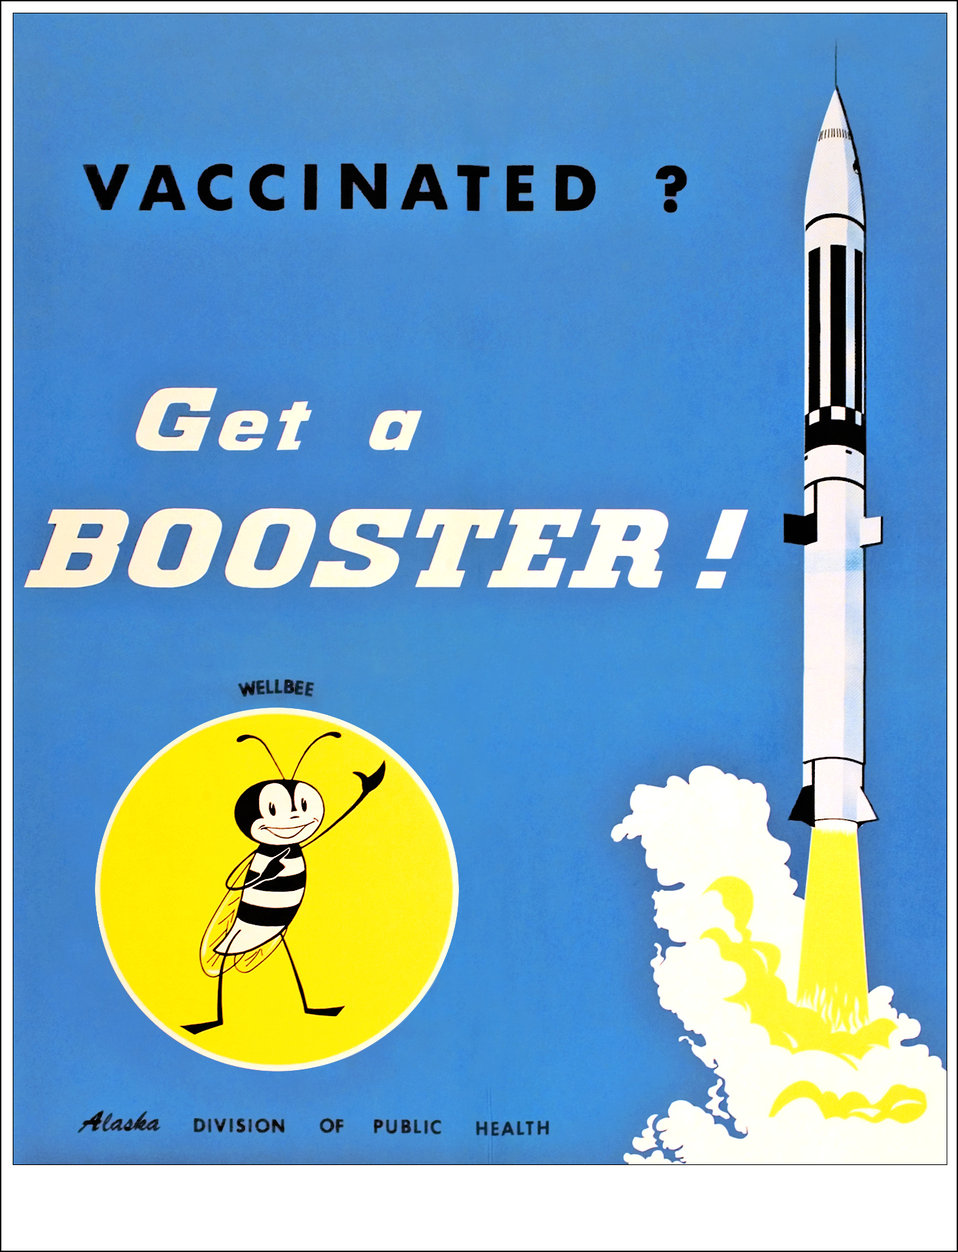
This 1964 poster featured what at that time, was CDC's national symbol of public health, the 'Wellbee', who here was reminding the public to get a booster vaccination.